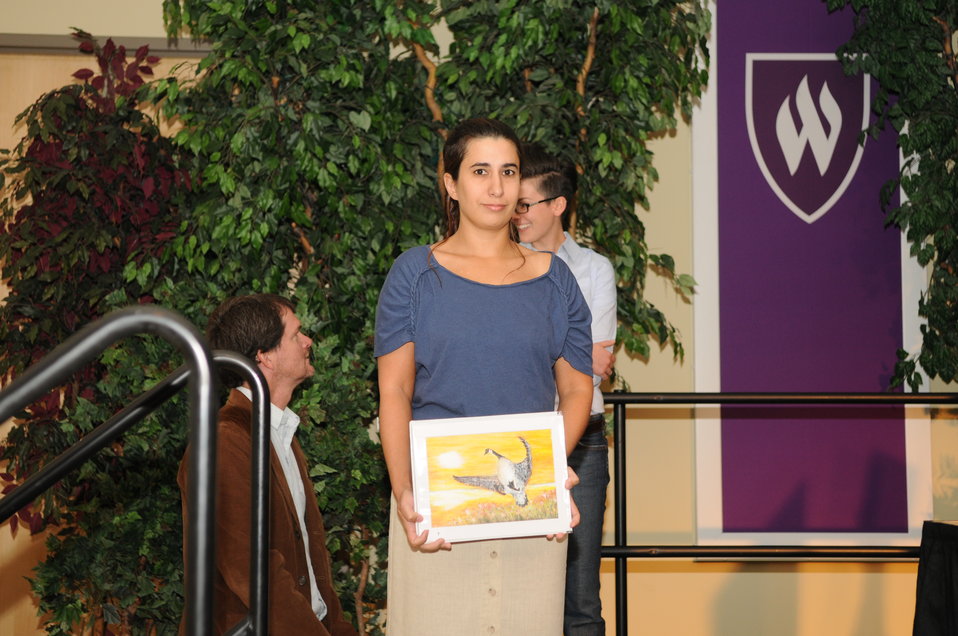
Judging

The U.S. Fish & Wildlife Service sponsored the 2012 Federal Duck Stamp Art Contest September 28 and 29 in Ogden, Utah, at Weber State University. A panel of five judges was responsible for choosing the art work used to design the 2013-2014 Migratory Bird Hunting and Conservation Stamp.